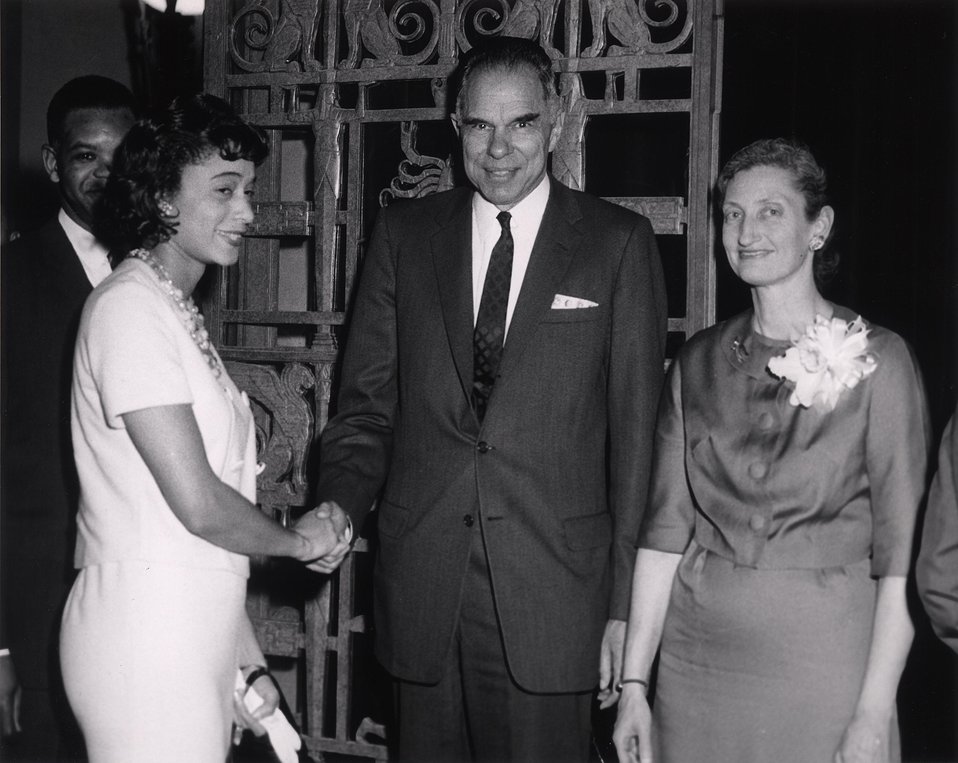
E. O . Lawrence Award Ceremony. National Academy of Sciences. April 29, 1965. Mr. and Mrs. Little, Dr. and Mrs. Seaborg.